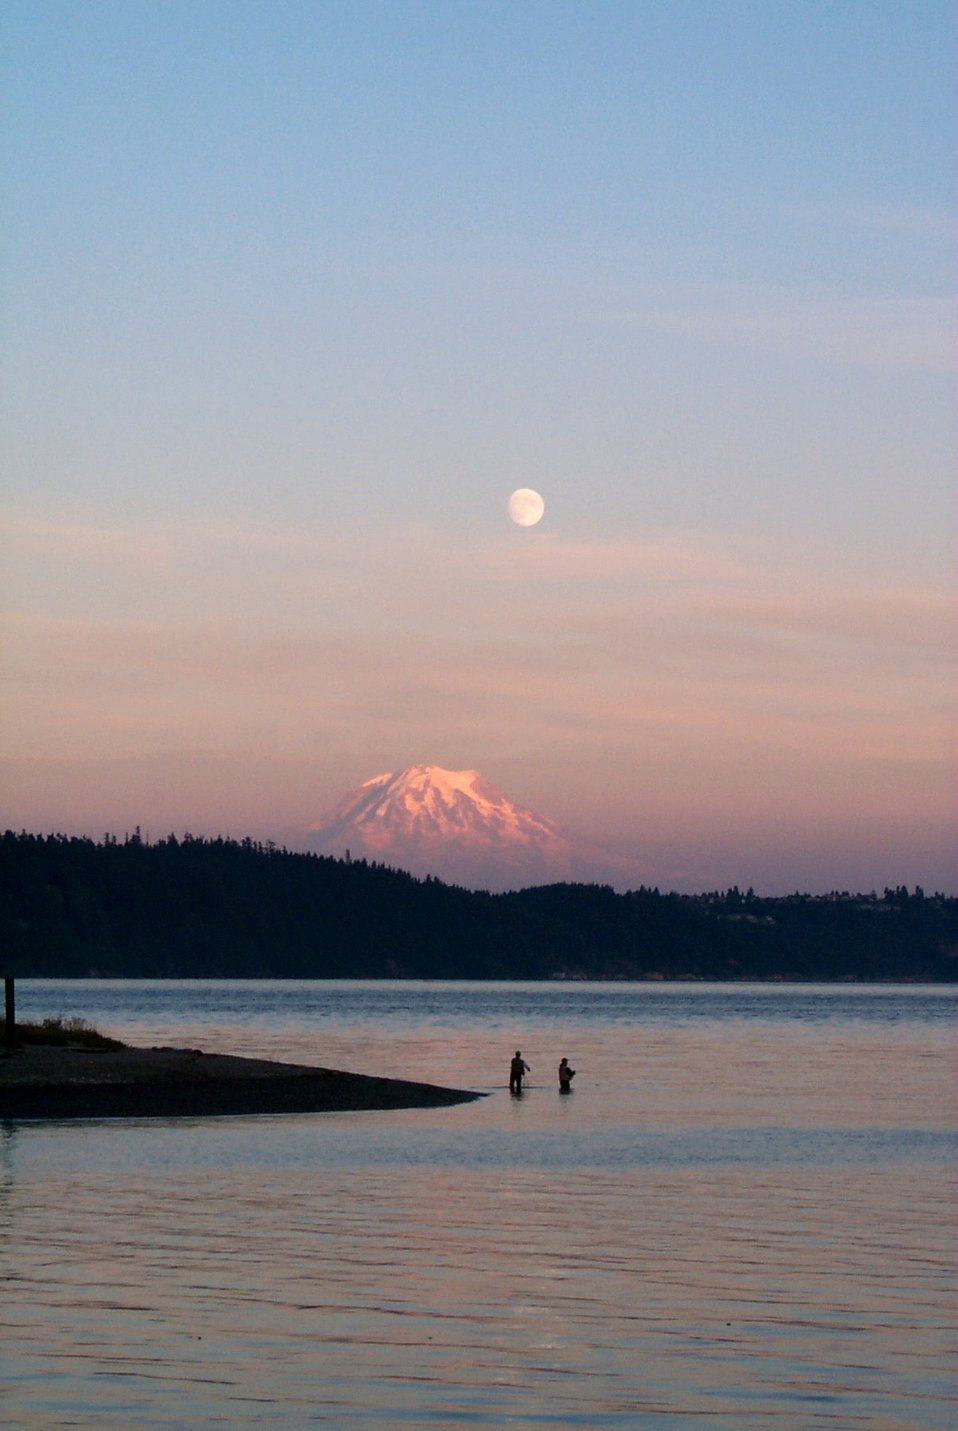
Fisherman's dream - sunset, moonrise, Mt. Rainier, and the salmon were running.